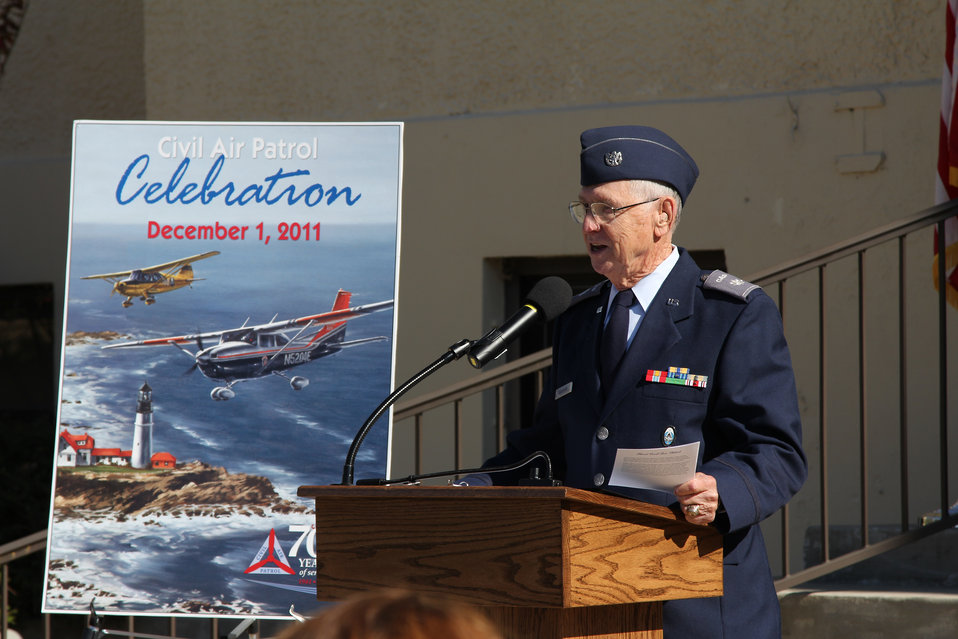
CAP marks 70th anniversary, honors World War II members

Retired Lt. Col. Otha Vaughan expresses his thanks after being honored with CAP's Exceptional Service Award during a ceremony at Maxwell Air Force Base, Ala., Dec. 1, 2011. Vaughan was recognized at the CAP 70th anniversary ceremony for his service as a cadet during World War II.